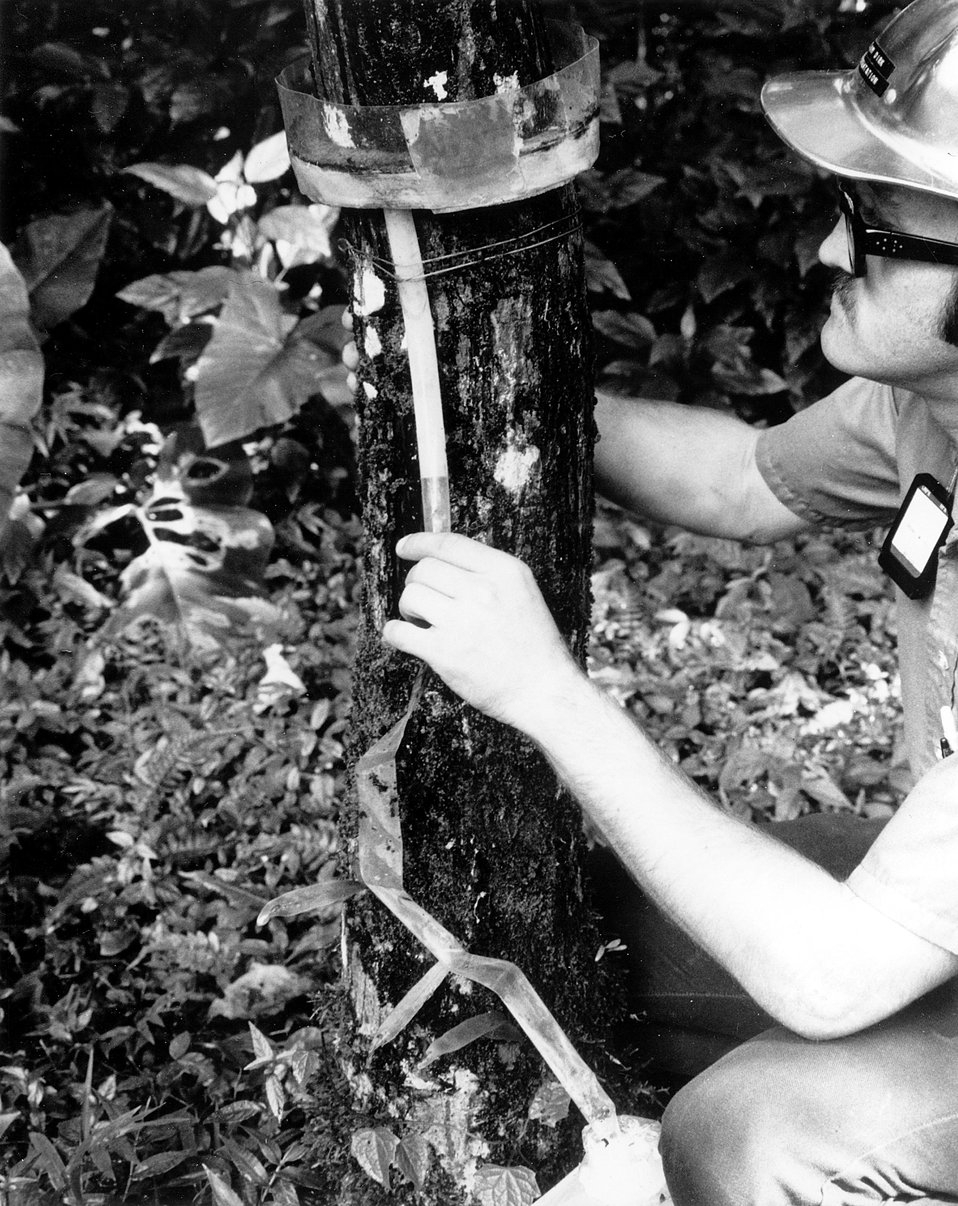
Animals which inhabit the El Verde Rain Forest in Puerto Rico are studied by researchers of the Atomic energy Commission's Puerto Rico Nuclear Center which has installed equipment in the dense forest to study the dynamics of rain forests. Circa 1972.